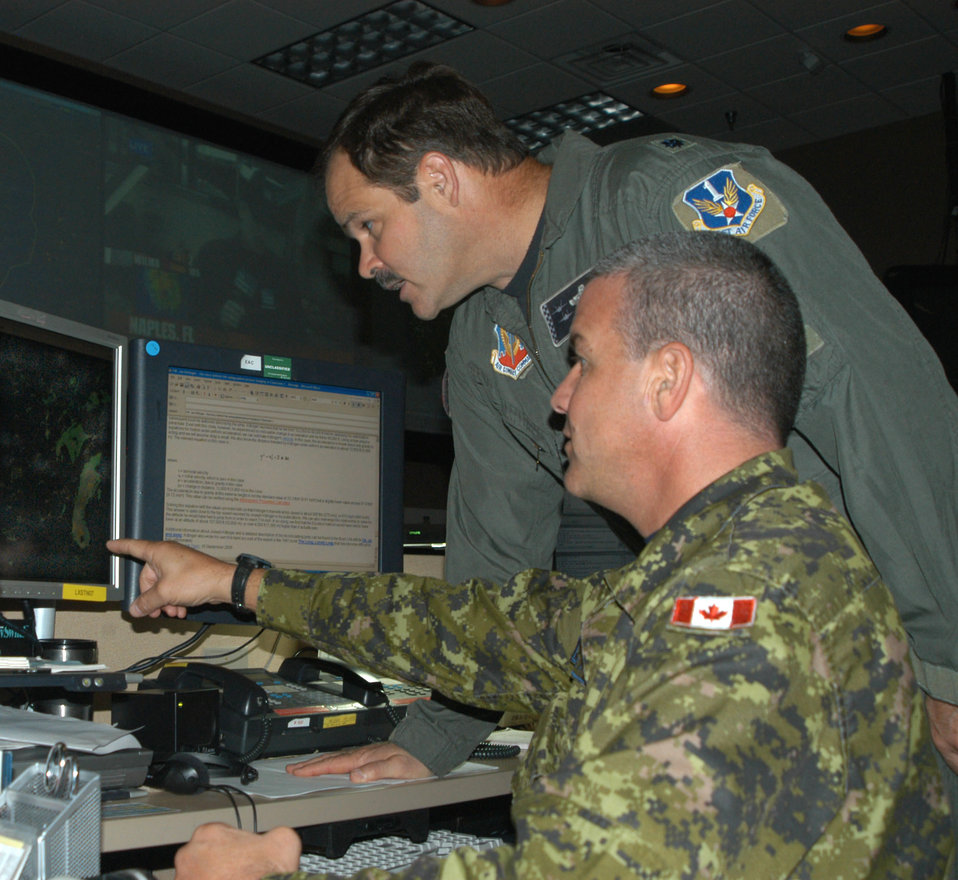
Hurricane watch

TYNDALL AIR FORCE BASE, Fla. (AFPN) -- Canadian Warrant Officer Richard Nadeau (sitting) and Lt. Col. Steve Browne examine the National Capitol Region air picture. The two are members 1st Air Force, part of North American Air Defense Command here. The command kept an eye on Hurricane Wilma -- and seven others over the past 14 months -- while continuing to protect the nation's skies.